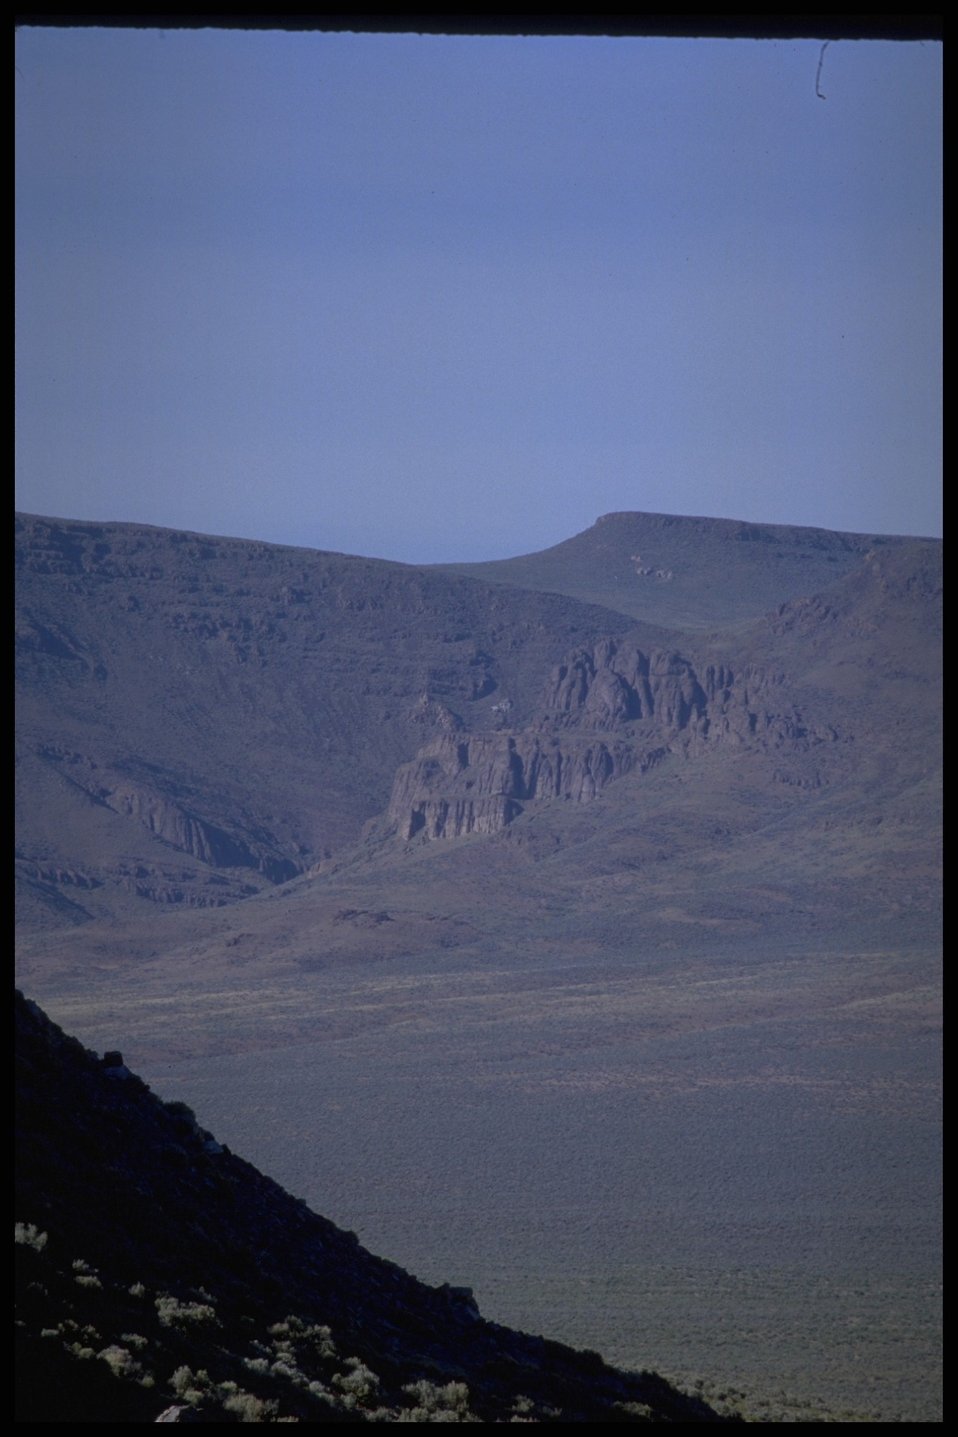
Scenic view of desert from above. Lakeview District.